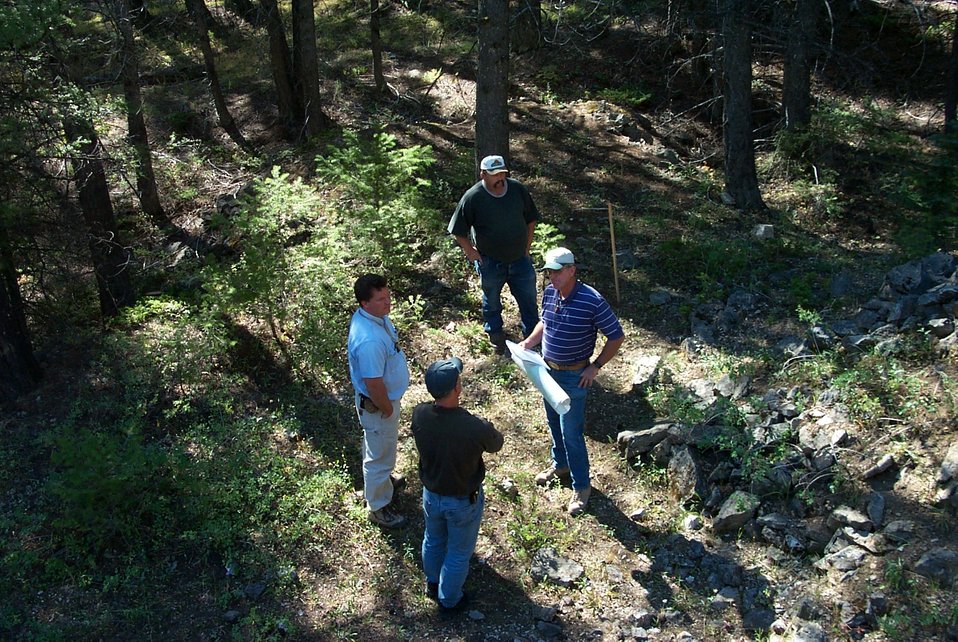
People Salmon Field Office UCSC Upper Columbia Salmon Clearwater District